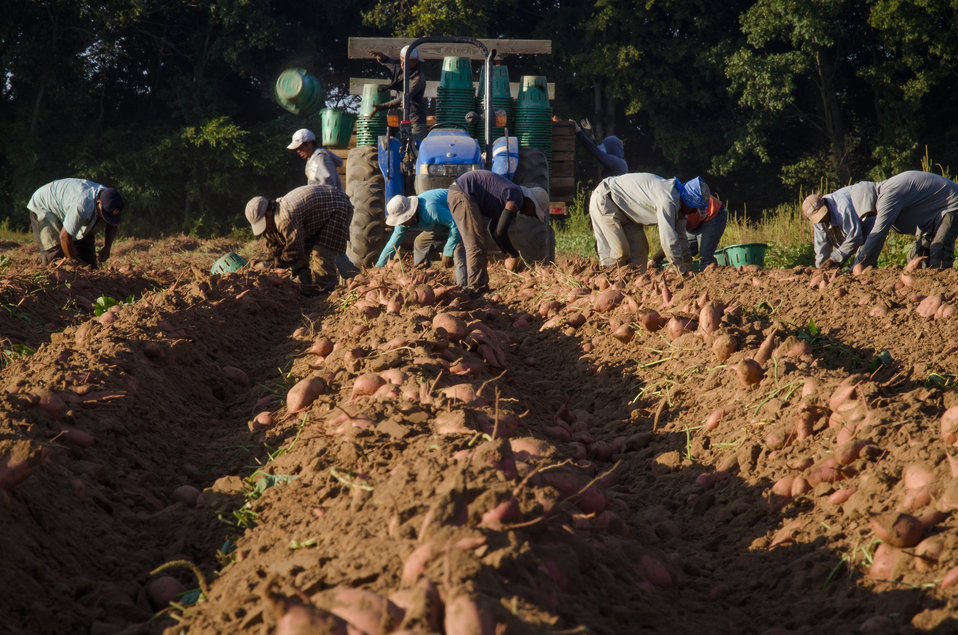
Large sweet potatoes, grown underground, are plowed up so migrant workers can carefully lift them to the top of the soil mound, trim off the greens, and sort the potatoes according to size at Kirby Farms in Mechanicsville, VA on Friday, Sep. 20, 2013. Kirby Farms is a third-generation family farm that covers 500 acres, and generates produce and grains on a year-around operation. Please see the photoset description for more information about this farm operation and harvest.